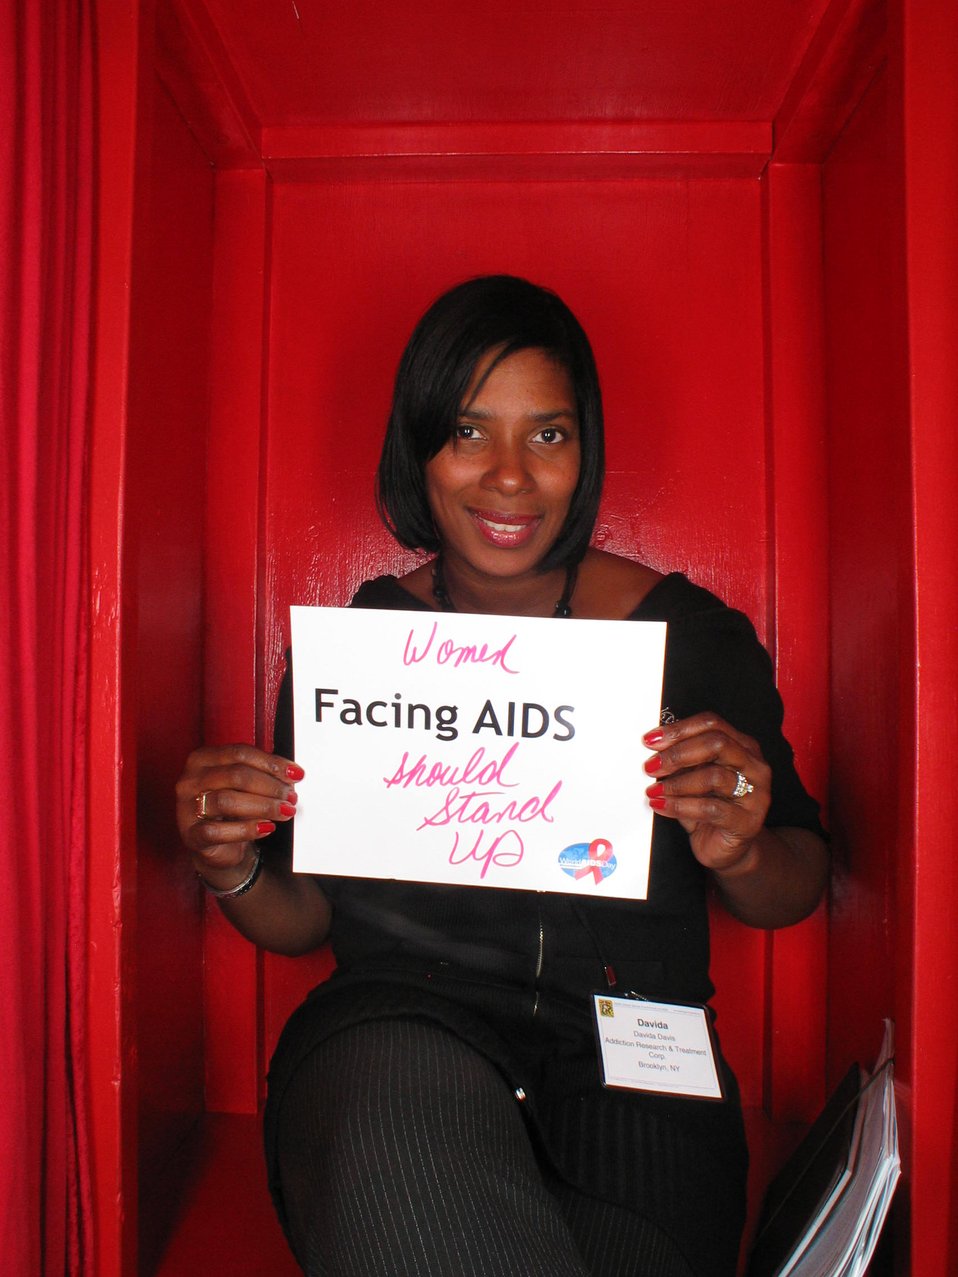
Women Facing AIDS should stand up